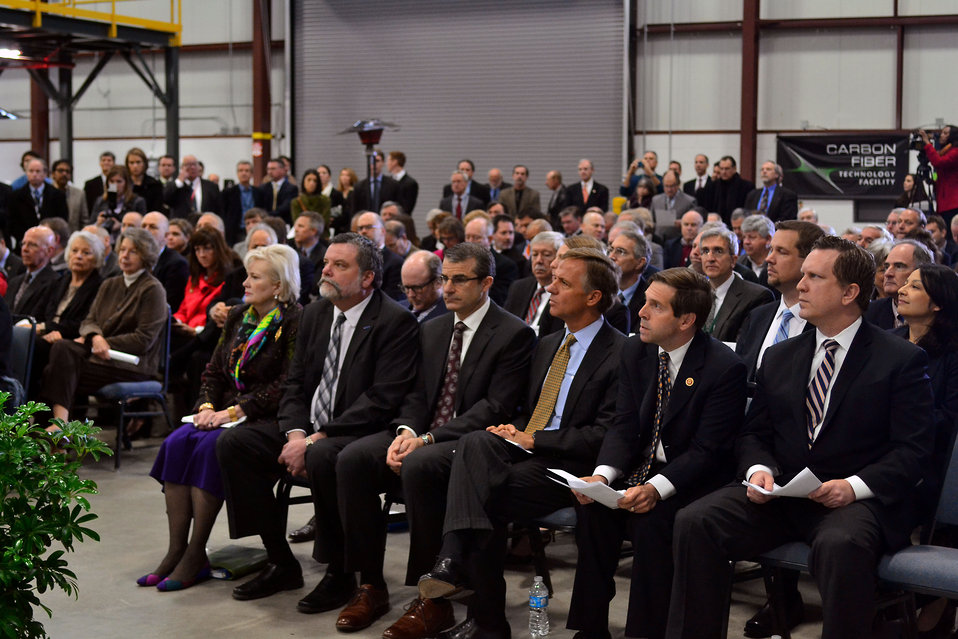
Carbon Fiber Technology Facilty Open House Oak Ridge Tennessee

13-025 DOE photo Lynn Freeny